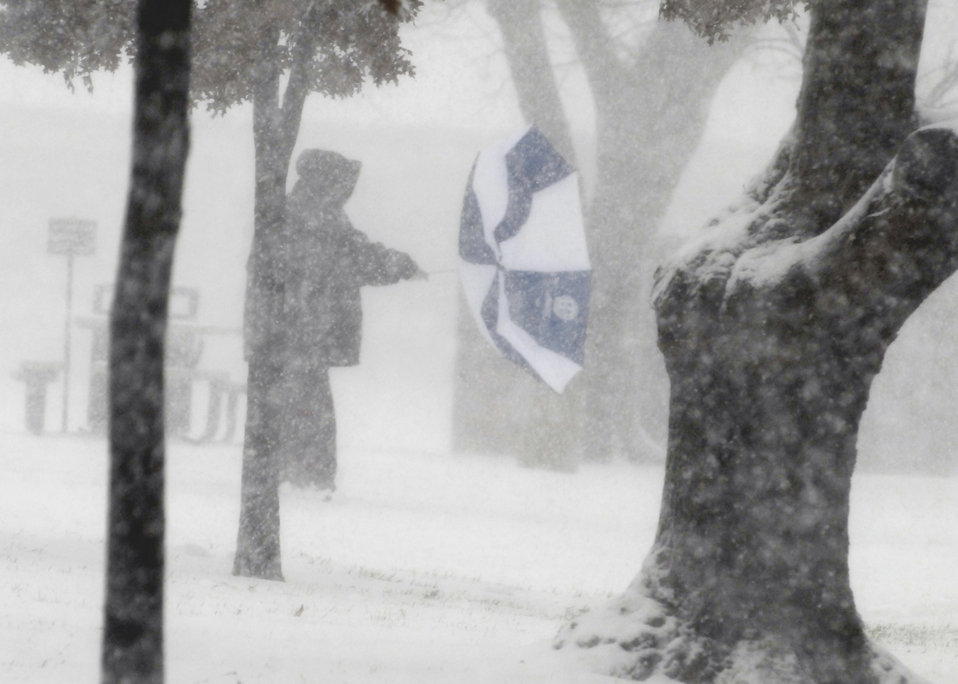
Boy, that's breezy

Strong winds cause an umbrella to go